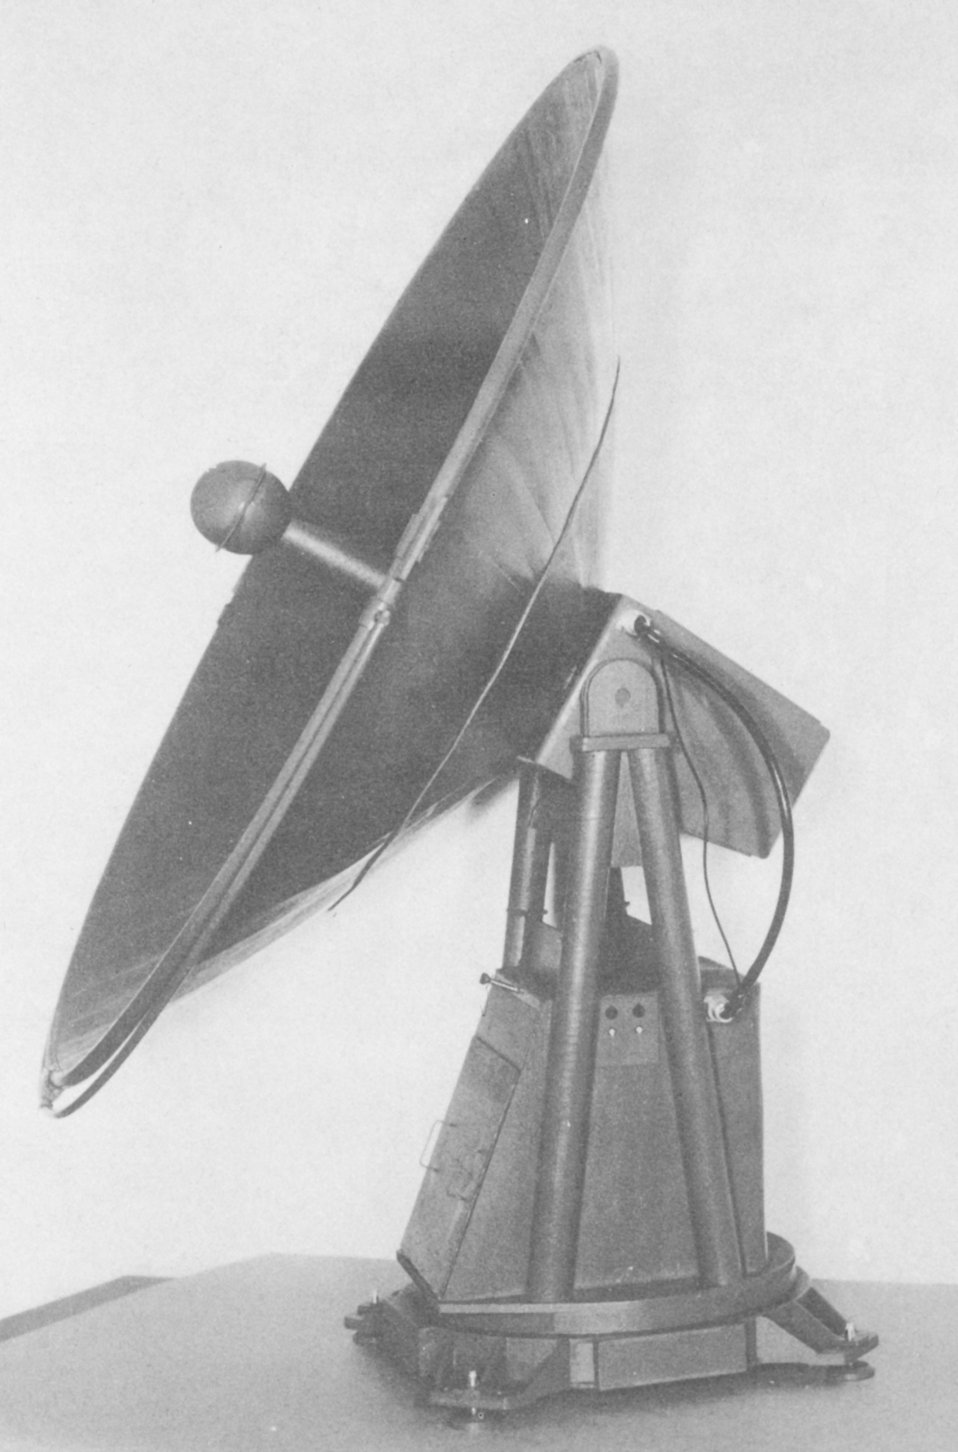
Scale model of new radiotheodolites meant to replace the SCR-658 bed-spring type for tracking balloon carried radiosondes.